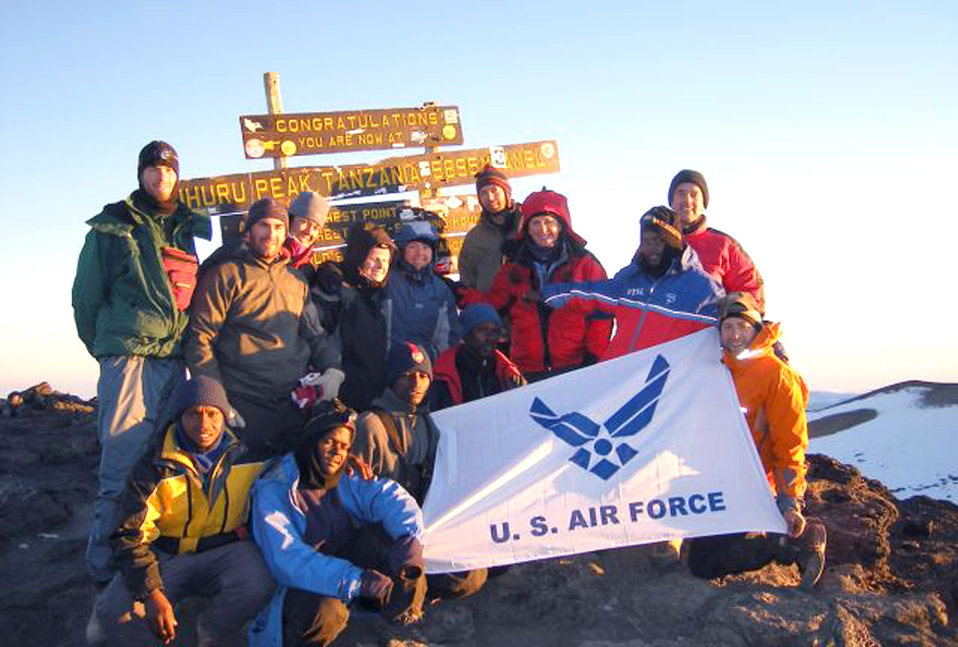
Team conquers mountain summit on quest

The Seven Summits Challenge team and two of their guides take a break in front of Mount Kilimanjaro July 12 at 13,000 feet, Day 3 of their ascent. They reached the summit July 16 at 6:30 a.m.